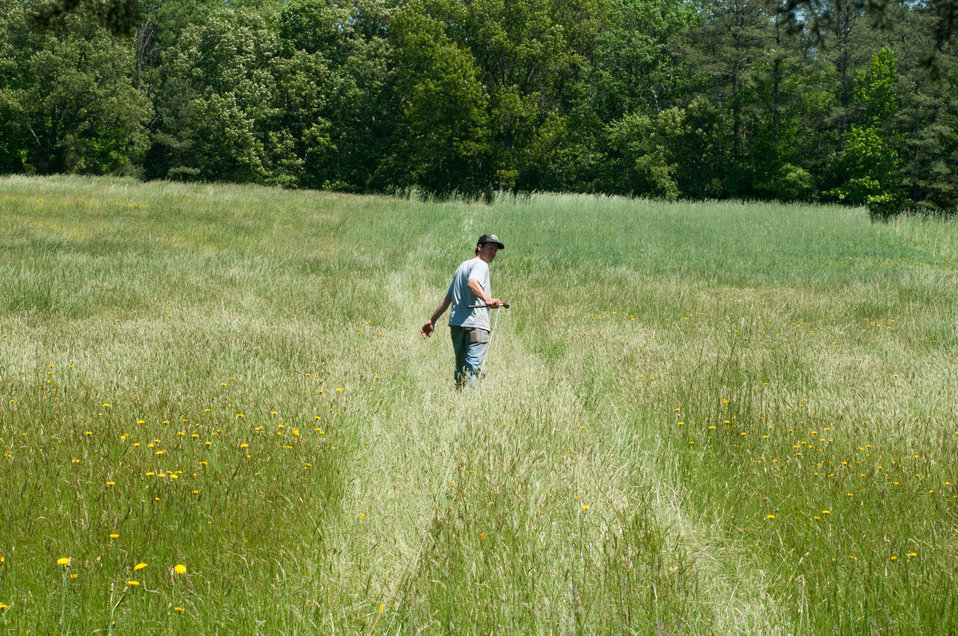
Fall Line Farms; cooperative, co-op; Richmond, VA.

Daniel Thompson plays out a line of wire across one of the pastures at Tuckahoe Plantation, in Goochland County, VA area on Thursday, May 5, 2011. When anchored and staked, the electrified fence will keep the cattle and sheep herd in the proper pastures where they graze on the grass and leave nutrient rich manure to revitalize the soil, enhancing regrowth. He does this once a day. The plantation was the boyhood home of President Thomas Jefferson from 1745 until 1752, today it is a working farm with cattle, sheep, chickens and rabbits supplying meats to Fall Line Farms a local food hub. Fall Line Farms offers a wide variety of household food staples and specialty items on an ever changing inventory of fruits, vegetables, meats, soaps, eggs, cheeses, flowers, honey, pastas, sauces, syrups, baked goods, mushrooms, flour and grains. Suppliers post what they have on a Lulus Local Food online listing and customers make their selection. Every Thursday, suppliers team up to deliver customized orders to, one of several pick-up points, designated by the customer in or around the Richmond, VA area.